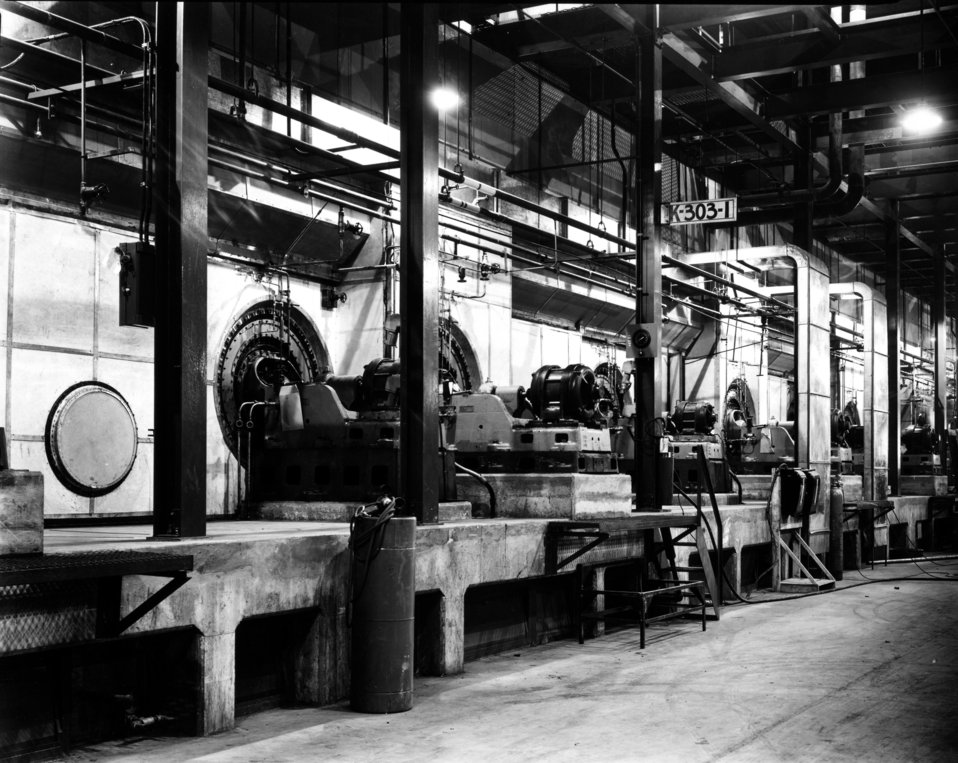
K-25 at Oak Ridge